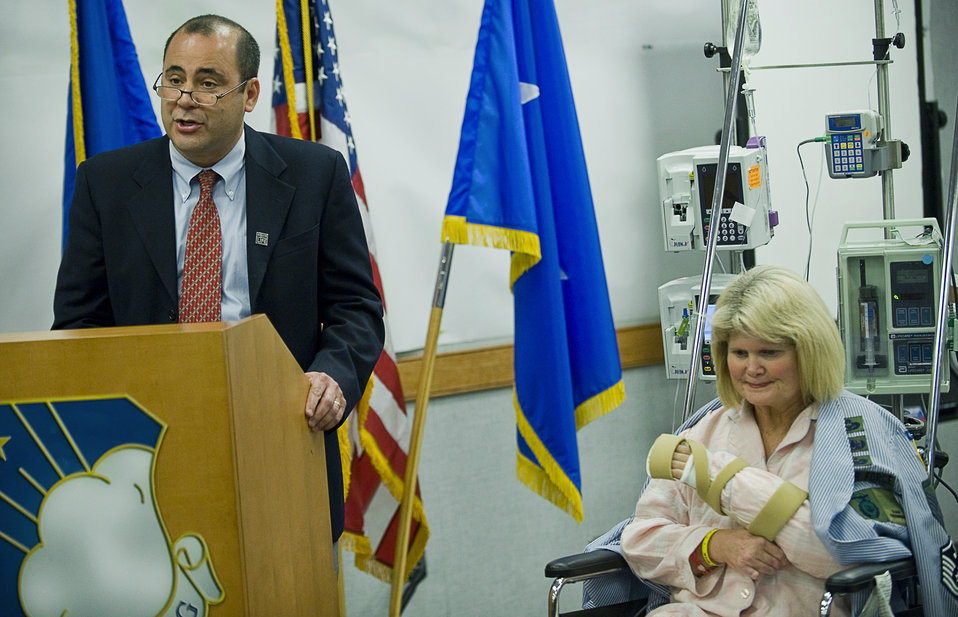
Doctors perform first hand transplant in DOD

Dr. Joe Nespral talks about the collaborative effort between military and civilian organizations for the first Department of Defense hand transplant with retired Master Sgt. Janet McWilliams at his side during a press conference March 3, 2010, at Wilford Hall Medical Center, Texas. Doctor Nespral is the director of clinical services at the Texas Organ Sharing Alliance.